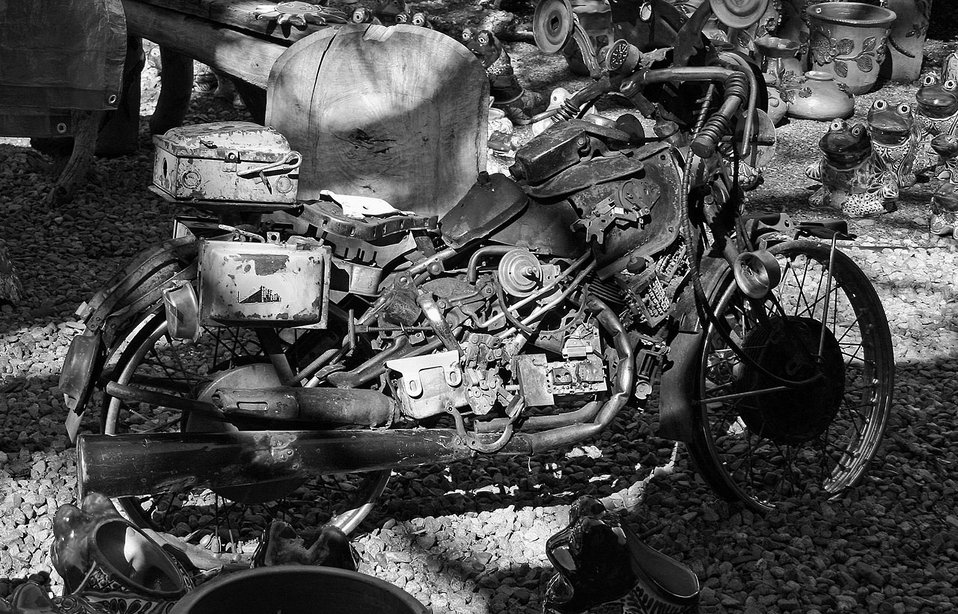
Black and white bike

Old motorcycle parts.